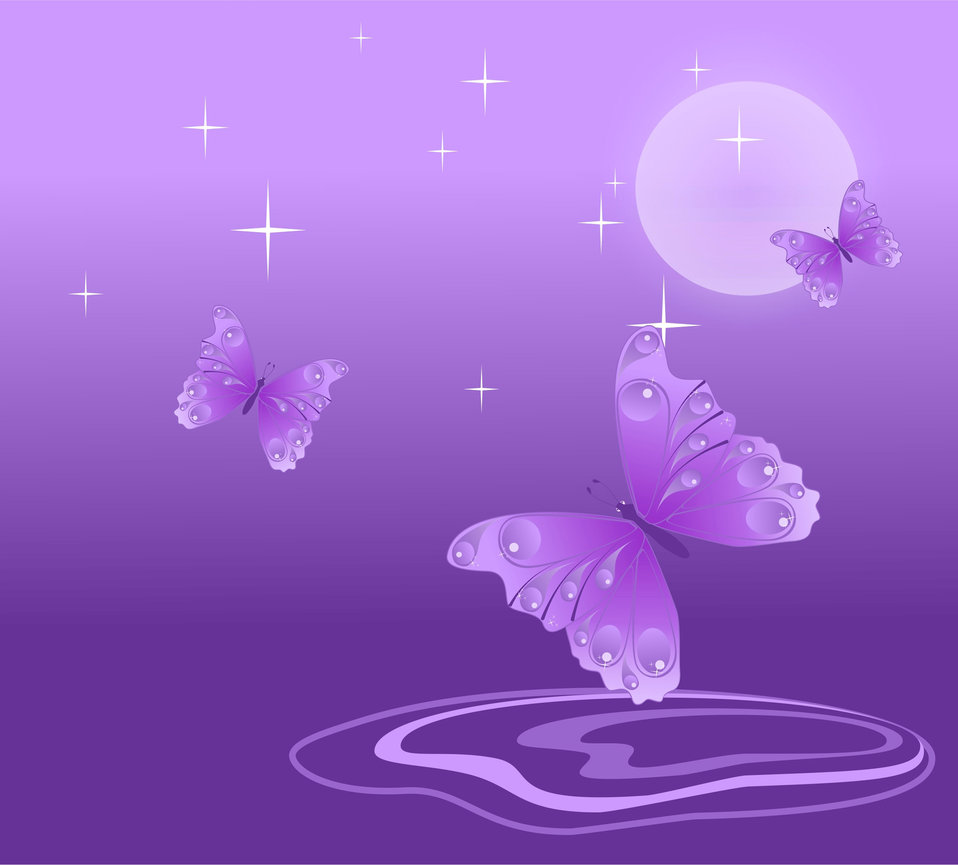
Vector background with butterflies

Purple background with butterflies.